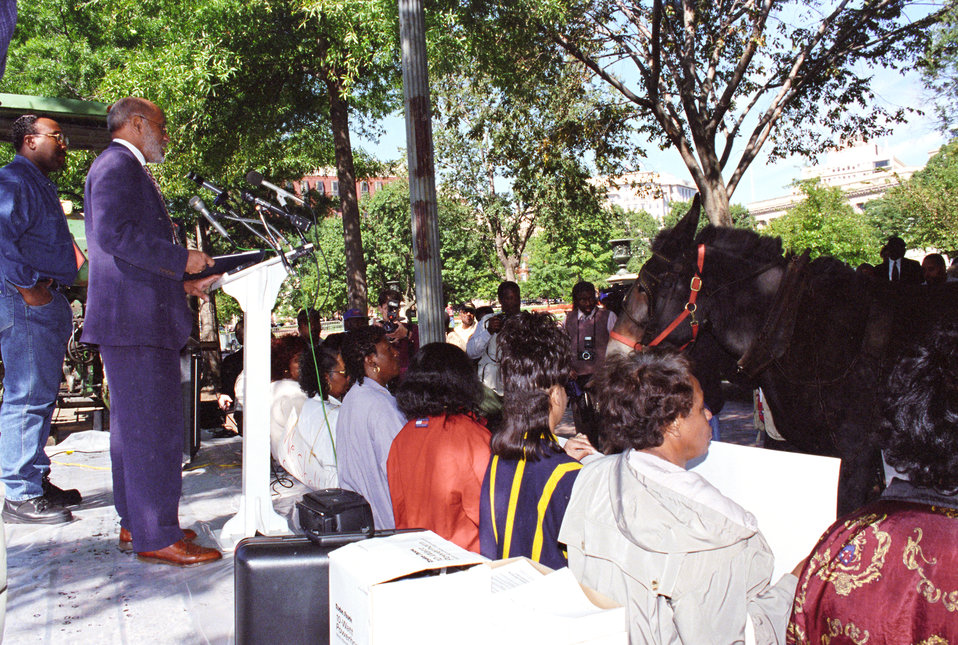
Black farmers protest at Lafayette Park across from the White House in Washington, D.C. on September 22, 1997. Protesters alleged the U.S. Department of Agriculture (USDA) denied black farmers equal access to farm loans and assistance based on their race. North Carolina farmer Timothy Pigford and 400 other black farmers filed the Pigford v. Glickman (Pigford I) class-action lawsuit against USDA in 1997. The USDA settled Pigford I in 1999.